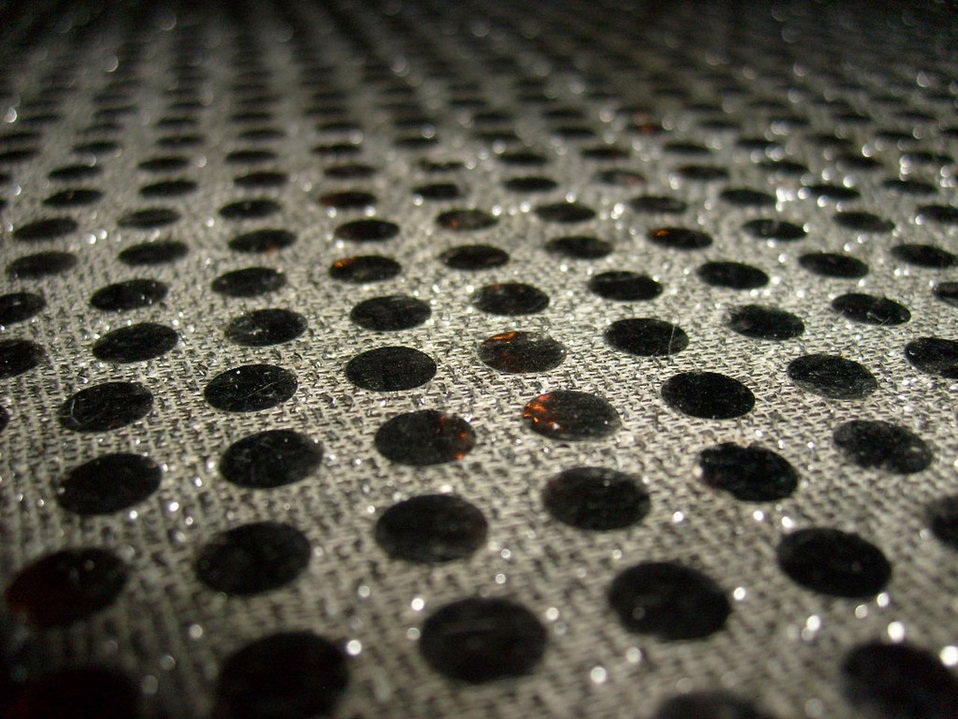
Gray dots pattern.